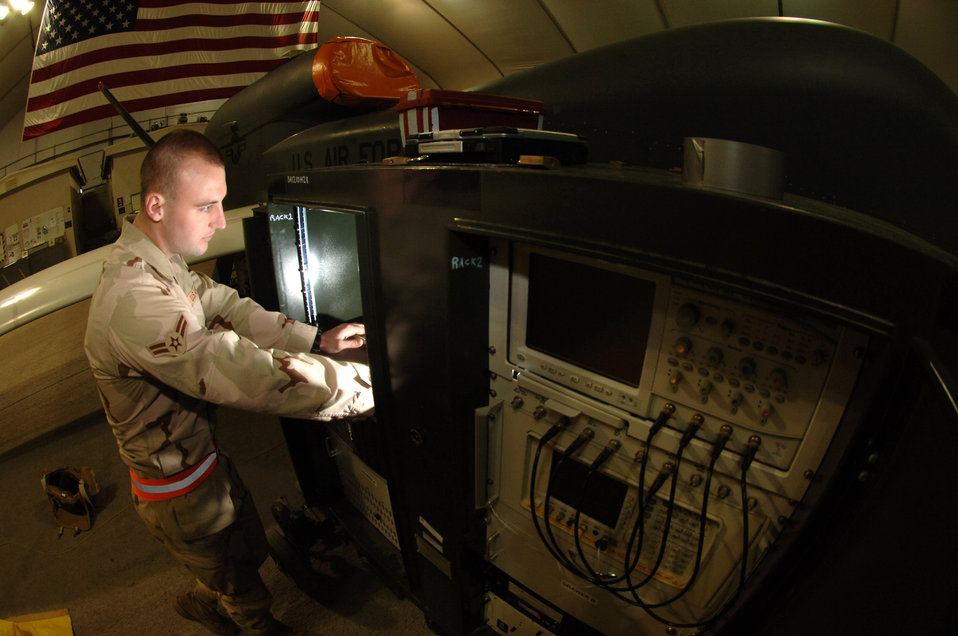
Global Hawk

Airman 1st Class Matthew Milles performs an operational check of the Global Hawk's sensor package March 11 in Southwest Asia. The Global Hawk recently reached the 10 year and 20,000 flight hour milestones. Airman Milles is a 380th Expeditionary Aircraft Maintenance Squadron aircraft avionics specialist.